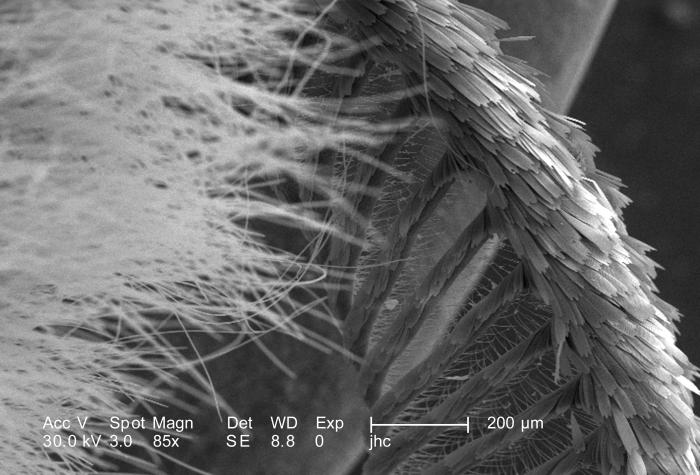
Under a relatively low magnification of 85X, this scanning electron micrograph (SEM) revealed some of the ultrastructural morphology located on the head region of an unidentified white moth, which had been found deceased on the ground in the suburbs of Decatur, Georgia. In this particular view, the feather-like structure of the moth's antenna was made more evident in this sensorial organ, made even more sensitive by the increase in its surface area due to the presence of a scalar surface. You'll also note the presence of small 'setae' or 'hairs', which add further to the antenna's sensitivity.